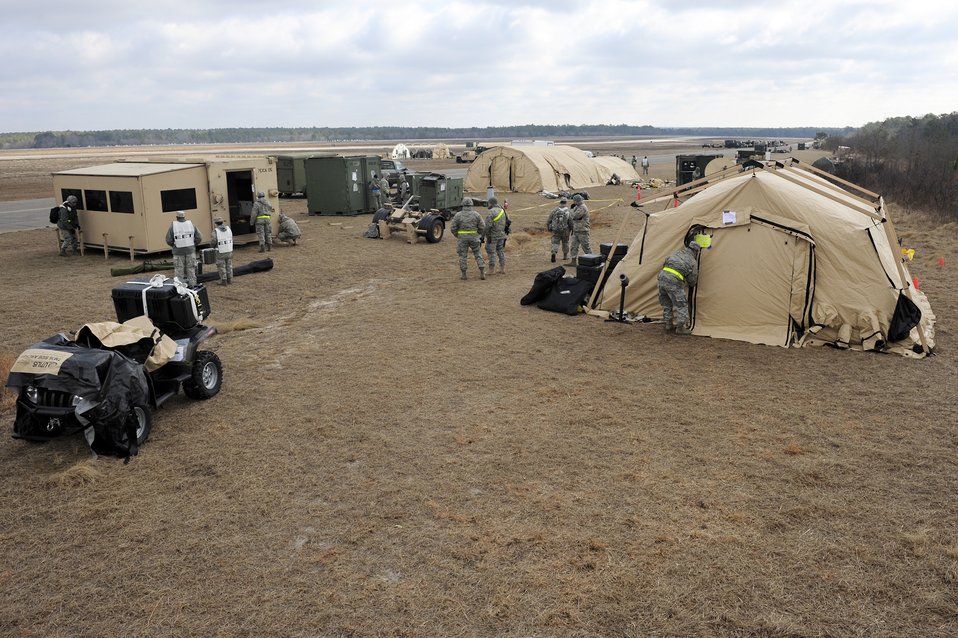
Joint operational access exercise

Airmen from the 570th Global Mobility Readiness Squadron set up an air base during a joint operational access exercise Feb. 10, 2011, near Fayetteville, N.C.